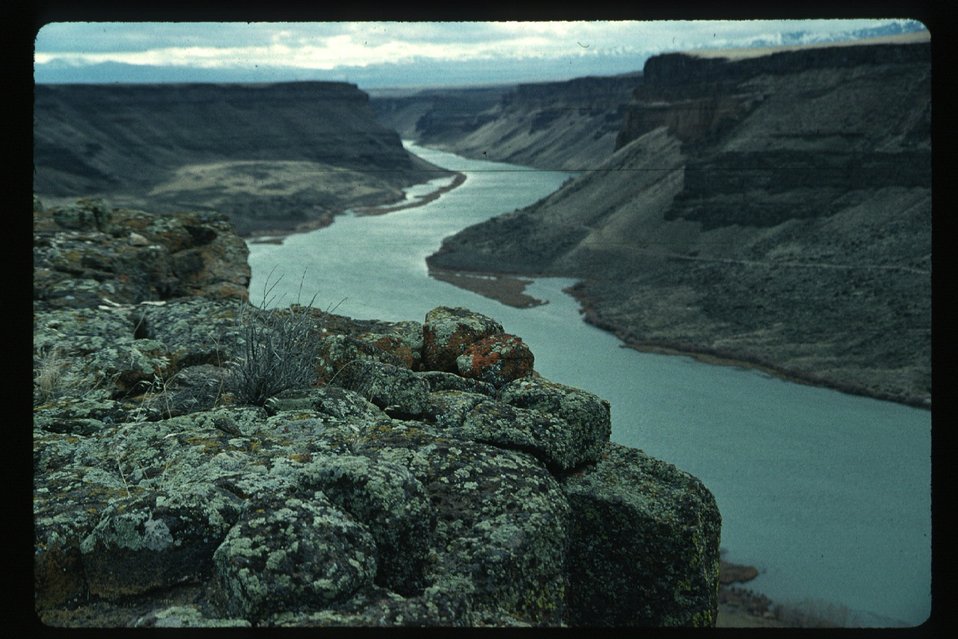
Snake River above Swan Falls Snake River Canyon Owyhee Field Office LSRD Lower Snake River District